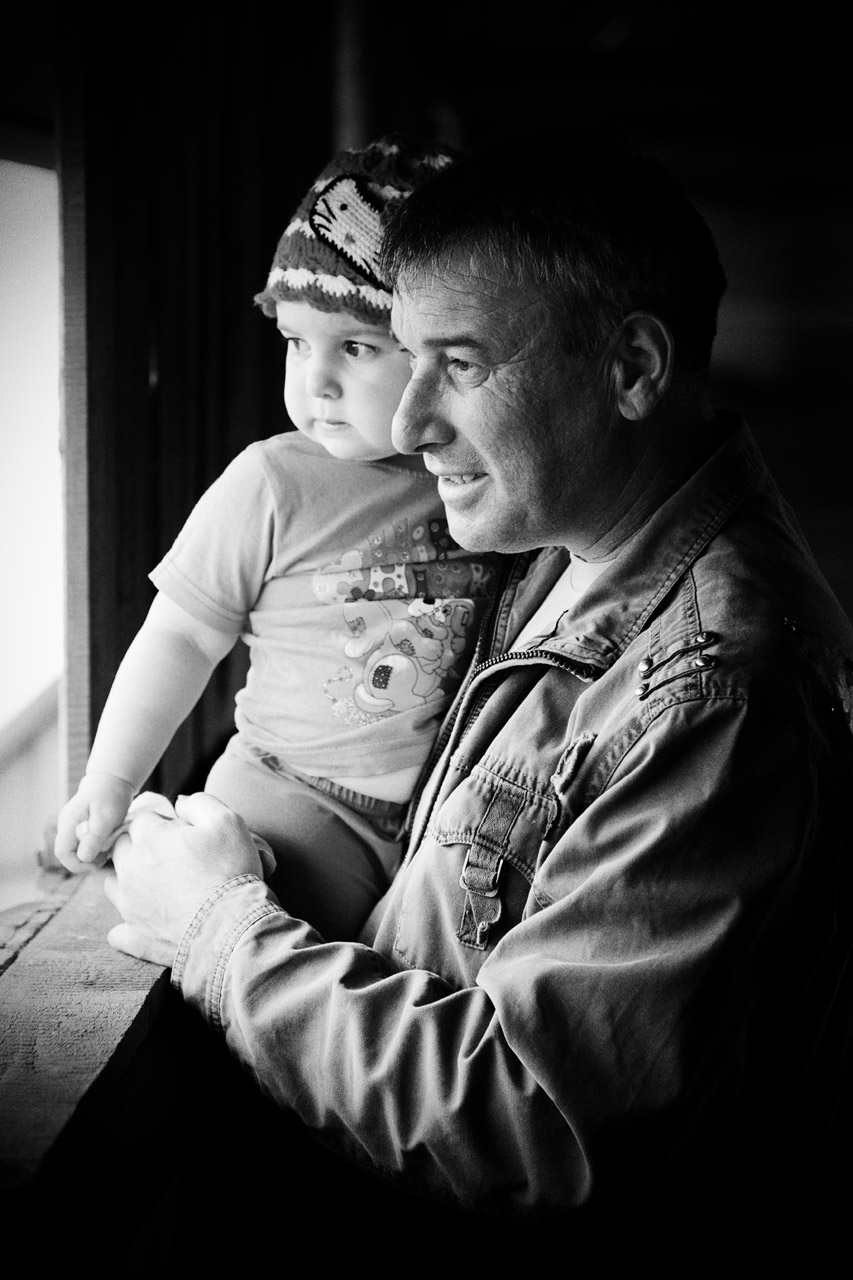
Father and daughter looking out of the window in black and white.